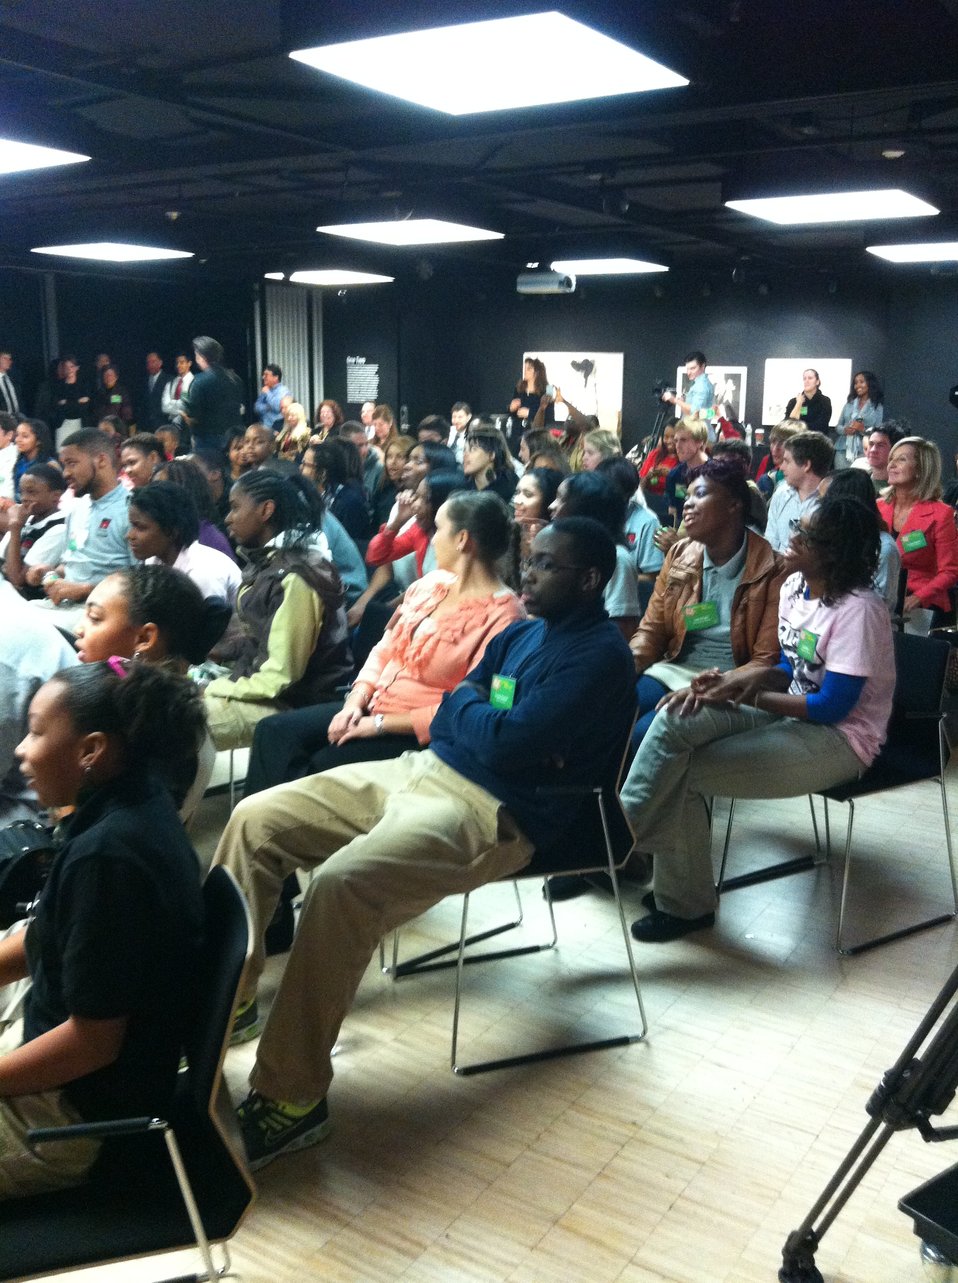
Mentor 10